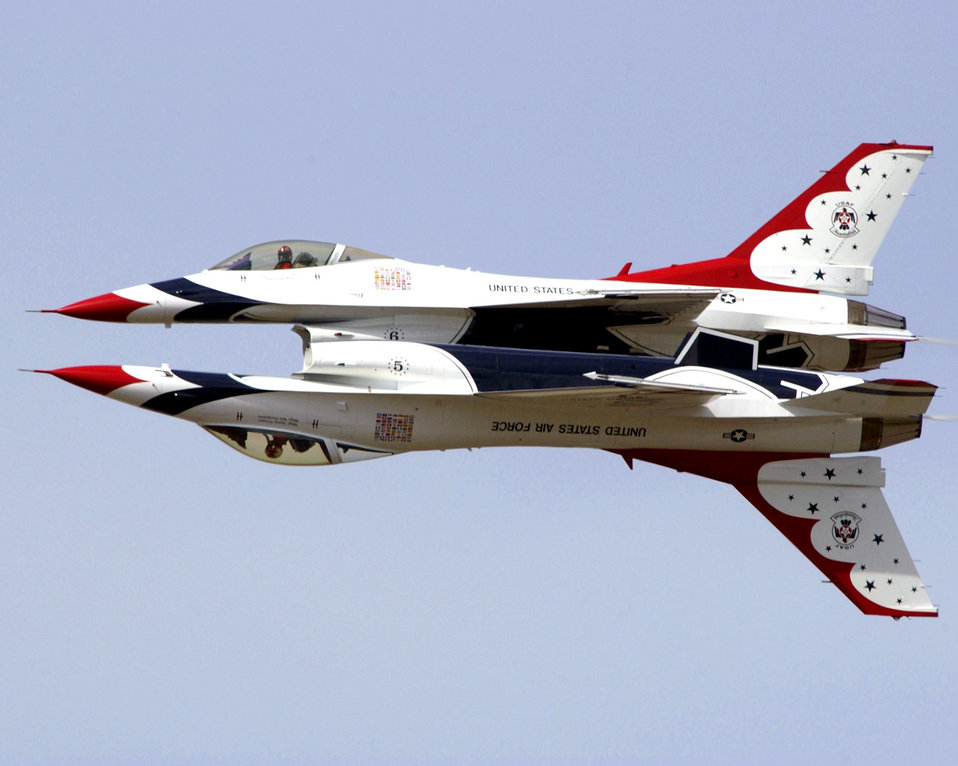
Mirror image

NELLIS AIR FORCE BASE, Nev. -- Thunderbird solo pilots team up to perform their trademark calypso pass. The Thunderbirds fly the F-16 Fighting Falcon, a fighter that is highly maneuverable and has a proven record in air-to-air combat and air-to-surface attack.